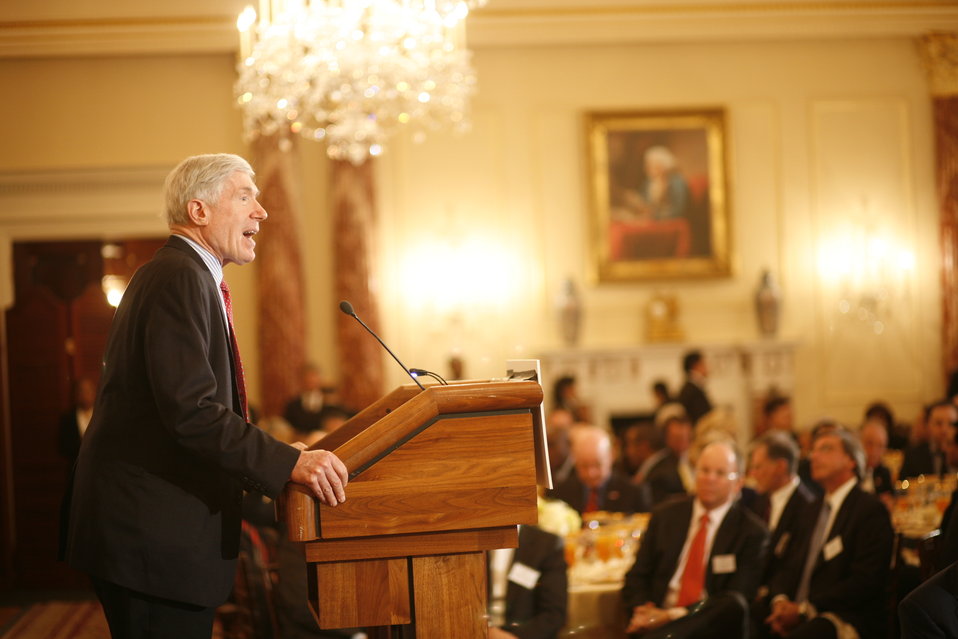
Under Secretary Hormats Delivers Remarks

Under Secretary of State for Economic Growth, Energy, and the Environment delivers remarks at the first-ever State Department Global Business Conference at the U.S. Department of State in Washington, D.C., on February 21, 2012.